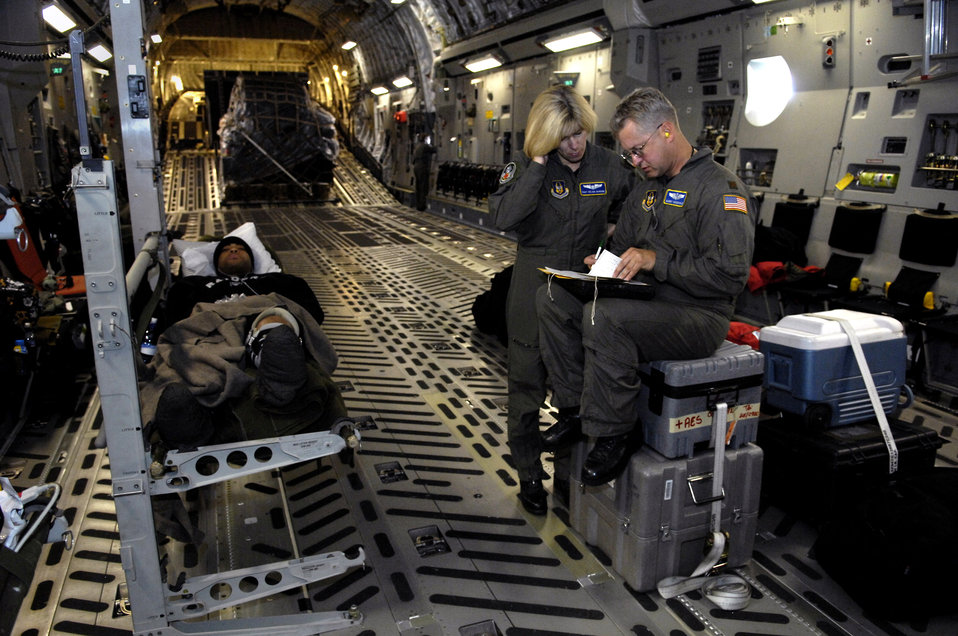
McChord C-17 crew flies medevac mission out of Antarctica

Tech. Sgt. Selina Barone and Maj. Berry Vansickle look over patient paperwork on board a C-17 Globemaster III medical evacuation flight Aug. 28 from Antarctica. The Airmen are from the 446th Aeromedical Evacuation Squadron from McChord Air Force Base, Wash. The medical evacuation mission was flown for a patient who required more definitive medical treatment than can be handled in Antarctica.